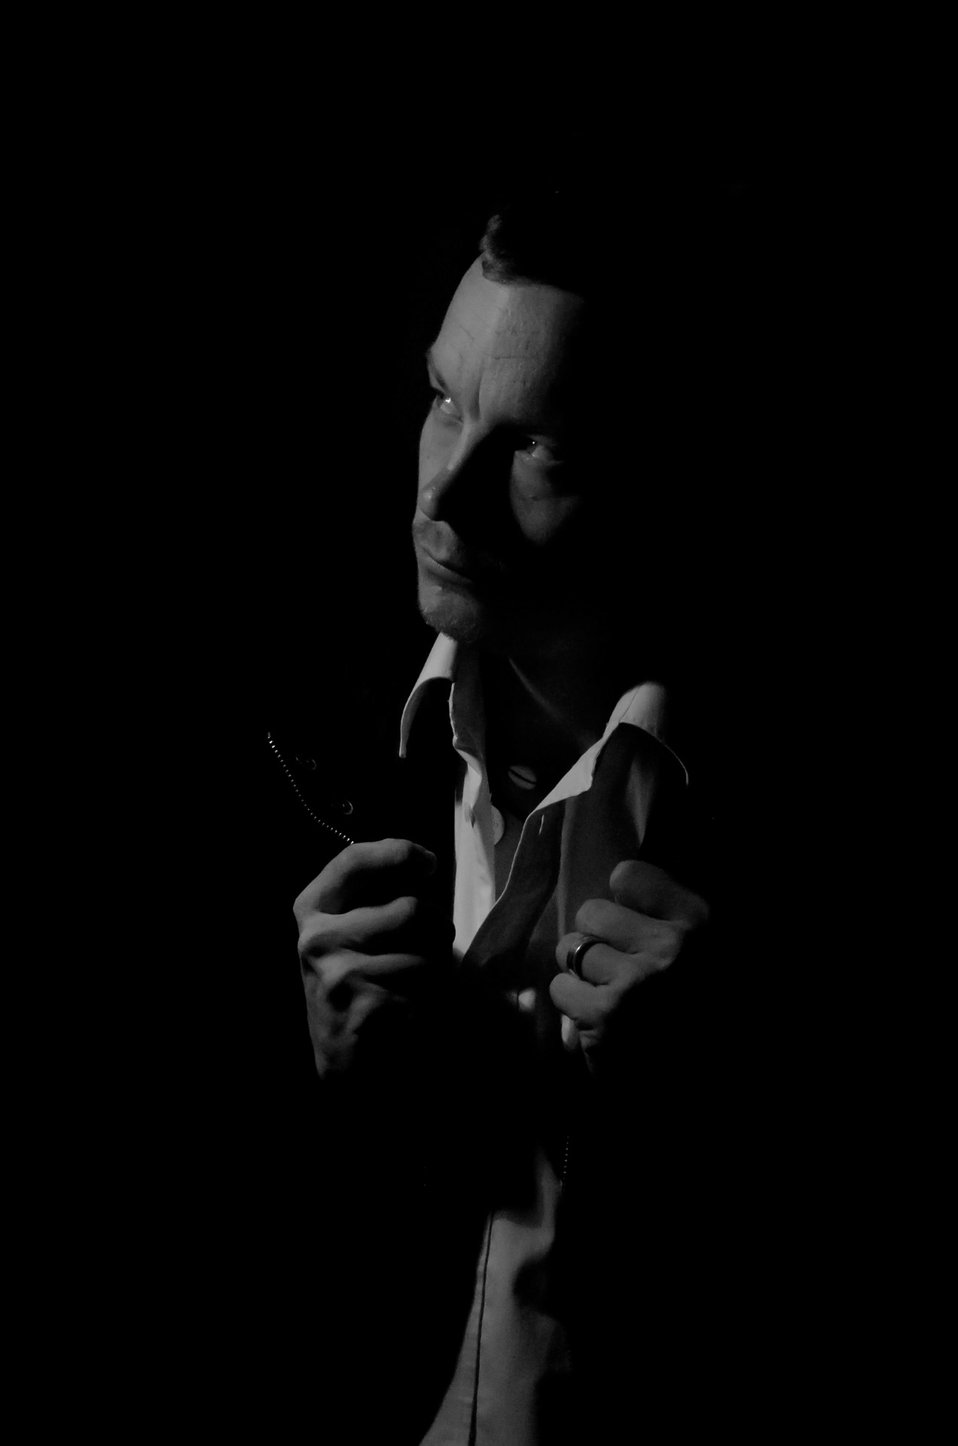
Man in shadow on the black background.